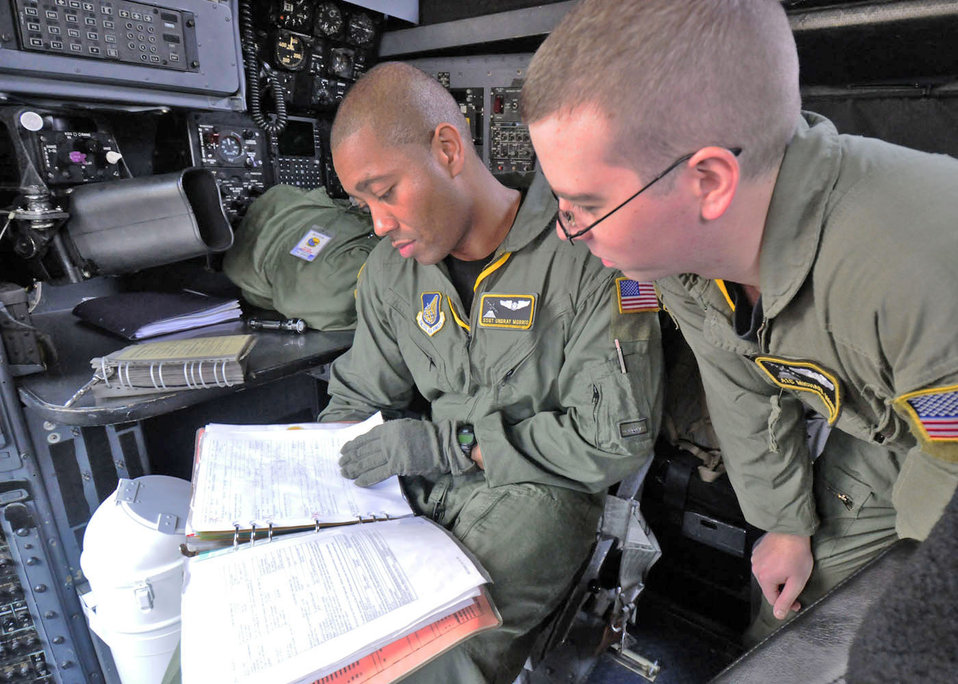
Pacific Airlift Rally 2009 kicks off

Staff Sgt. Undray Morris (left) and Airman 1st Class Michael Mason check some C-130 Hercules forms before takeoff Aug. 19 at Subang Royal Mayaysian Air Force Base, Malaysia. The Airmen are participating in Pacific Airlift Rally 2009. Sergeant Morris is a 36th Airlift Squadron flight engineer, and Airman Mason is a 36th AS loadmaster.